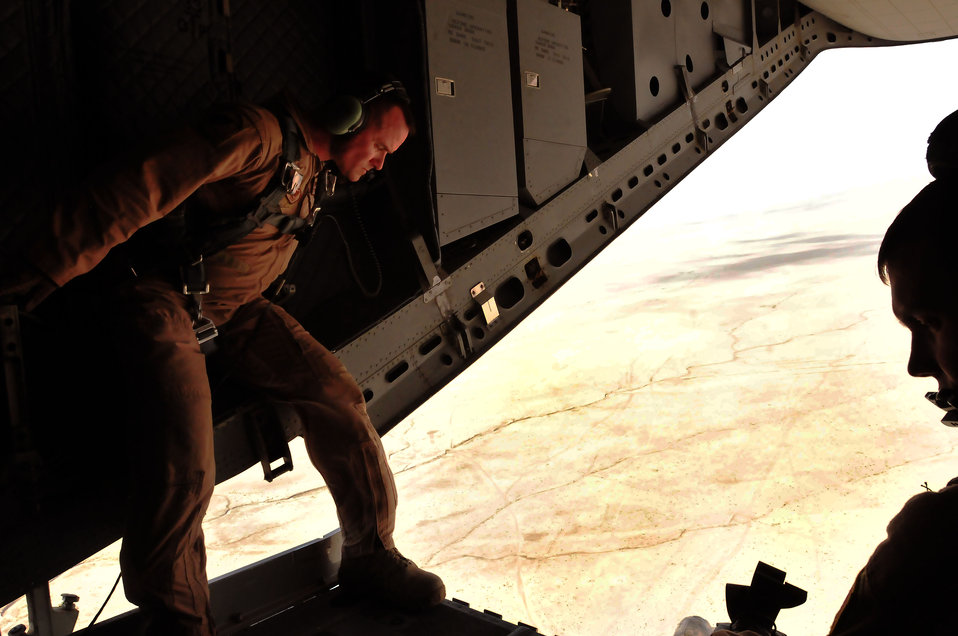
C-27 over Afghanistan

Master Sgt. Chris Ringland stands with Staff Sgt. Talon Martin as they prepare for an airdrop July 1, 2010, over Afghanistan. Sergeant Ringland is with the 438th Air Expeditionary Advisory Group and Sergeant Martin is with the 538th Air Expeditionary Advisory Squadron.